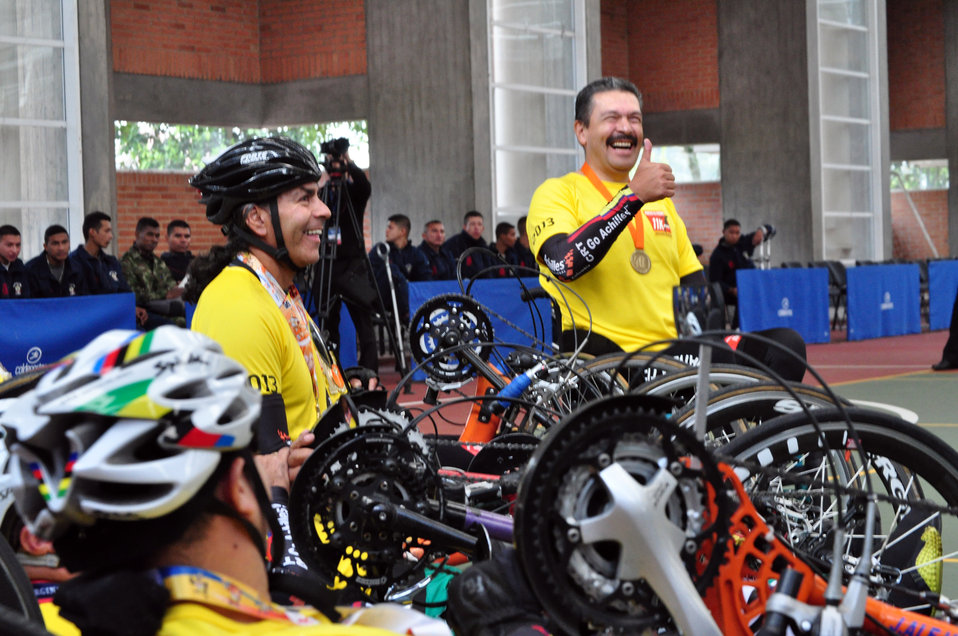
Colombian Disabled Cyclists Speak With Secretary Kerry

A group of Colombian disabled cyclists speak with U.S. Secretary of State John Kerry during his visit to the Coldeportes Center in Bogota, Colombia, on August 12, 2013.